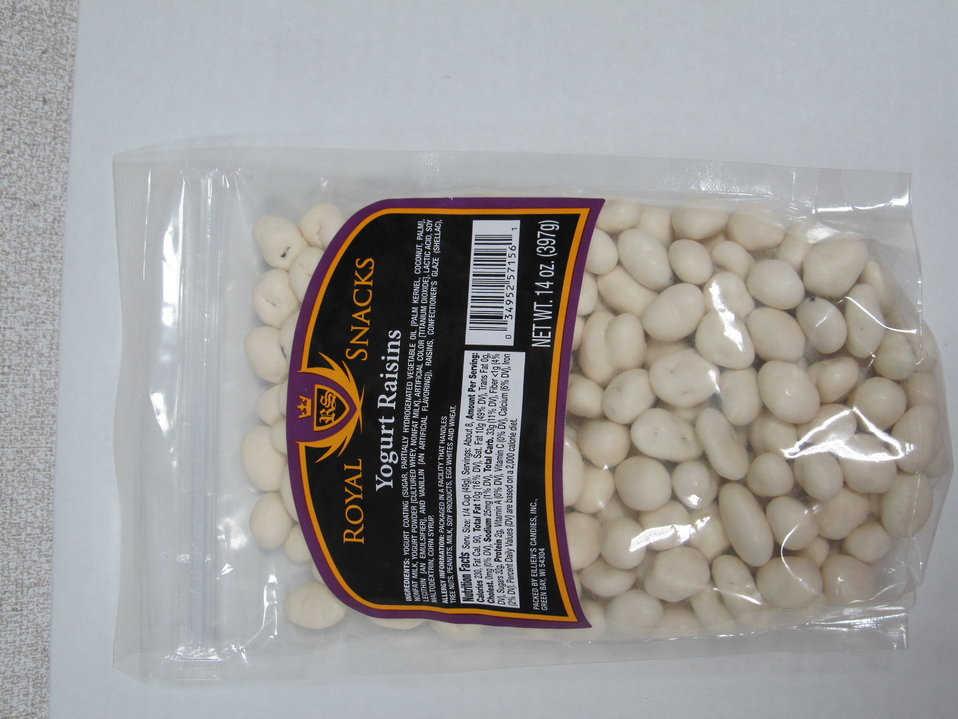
RECALLED - Yogurt Raisins and Granola Mix

December 22, 2011 - Eillien's Candies, Inc. Issues a Voluntary Recall of Select Candy Items Due to Possible Health Risk.